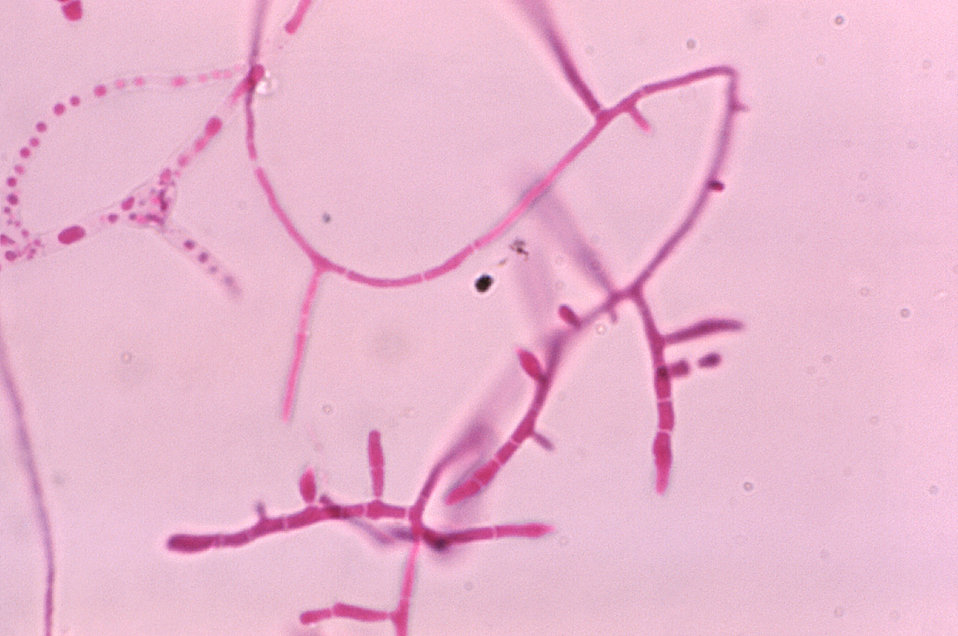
This photomicrograph depicts the microconidia of the fungus Trichophyton mariatii.